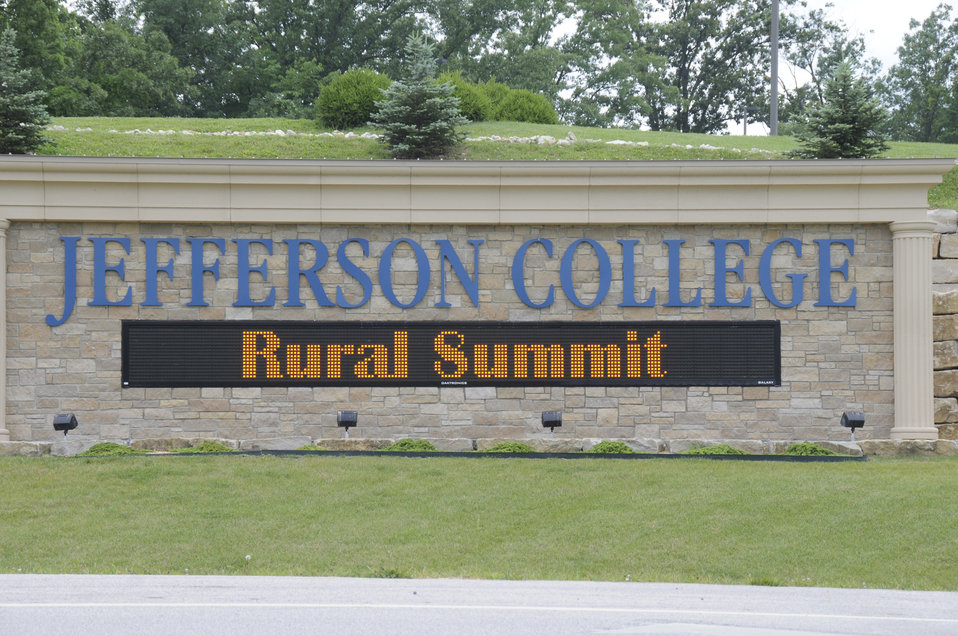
Sign at Jefferson College in Hillsboro, MO., for the USDA Rural Summit on Thursday, June 3, 2010. USDA Photo 10di1388-309.